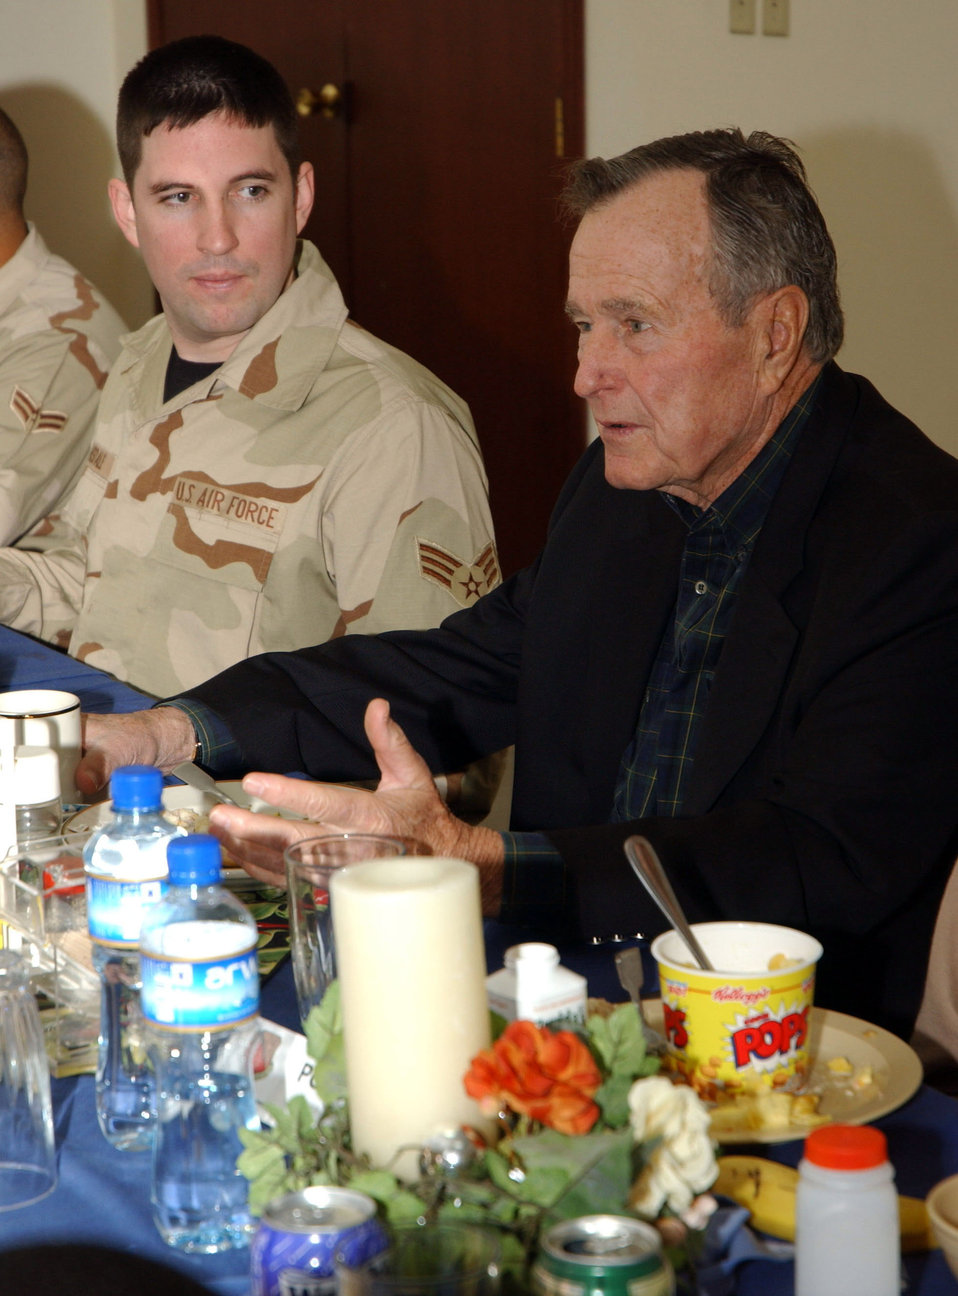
Former president visits deployed troops

SOUTHWEST ASIA (AFPN) -- Former President, George H. W. Bush, meets with troops for breakfast during a visit this week to a deployed location in Southwest Asia. To the former president's right is Senior Airman Jonathan Cansdale, deployed from the 354th Fighter Wing at Eielson Air Force Base, Alaska.